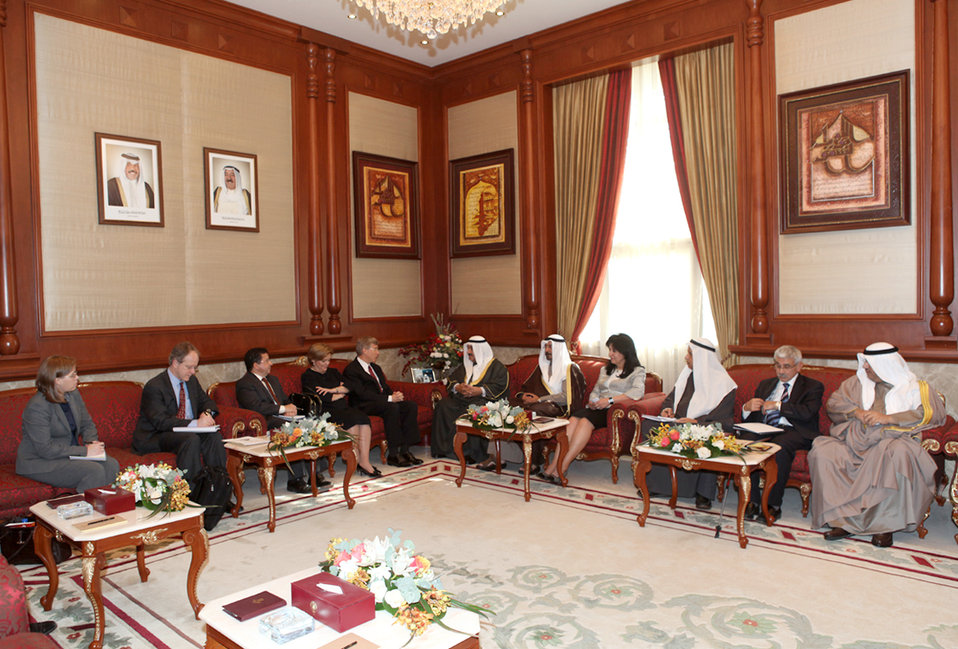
0

Deputy Secretary Poneman meets with Prime Minister Sheikh Nasser Al-Mohammad Al-Ahmad Al-Jaber Al-Sabah of Kuwait.